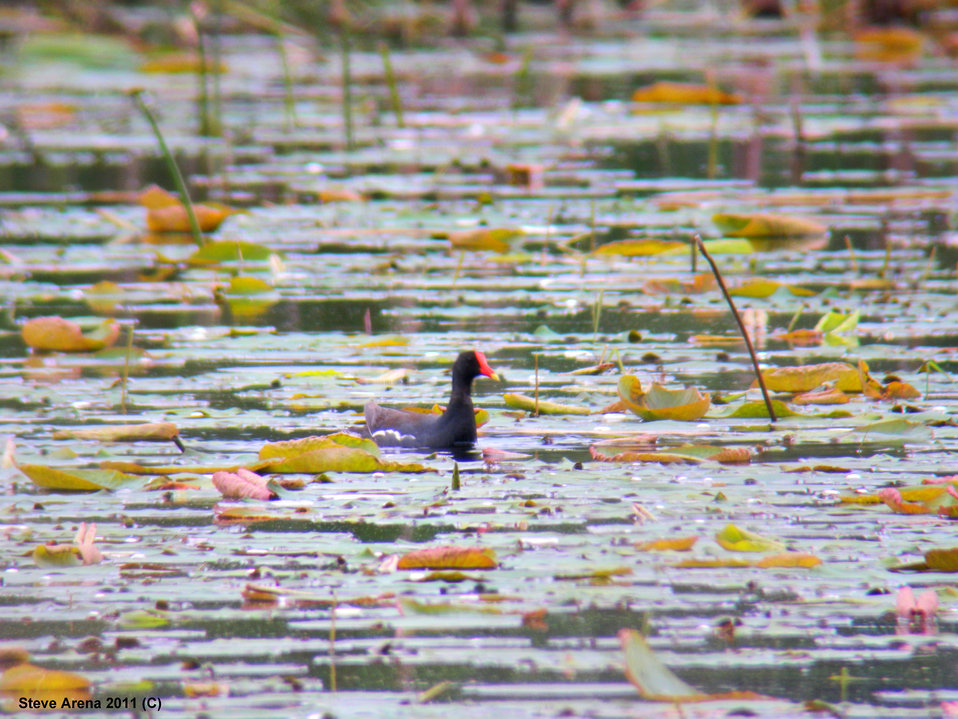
Common Gallinule (Gallinula chloropus) - formerly Common Moorhen - Upper Pool 10 June 2011 - photo was digiscoped

Common Gallinule at Great Meadows National Wildlife Refuge.